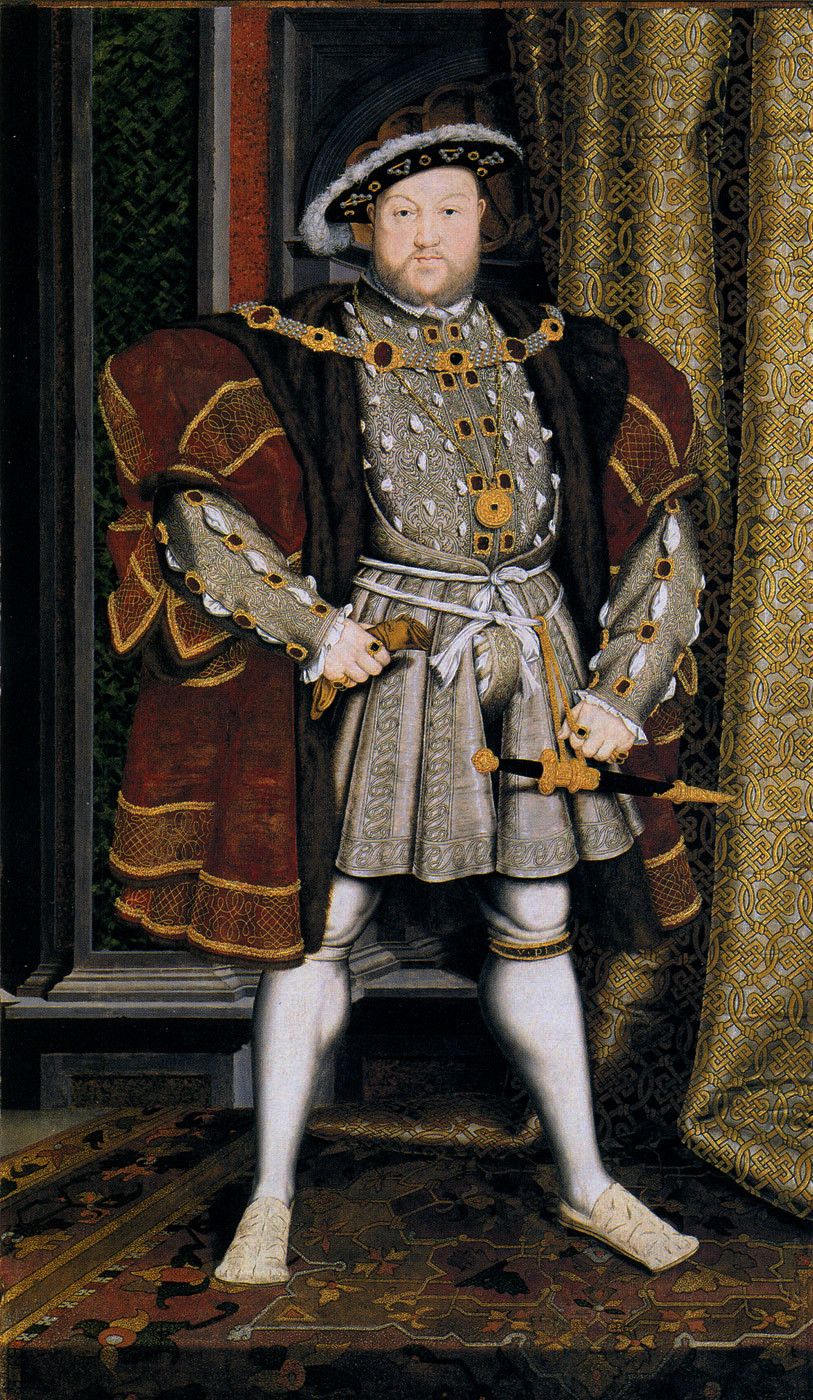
Henry-VIII-kingofengland 1491-1547